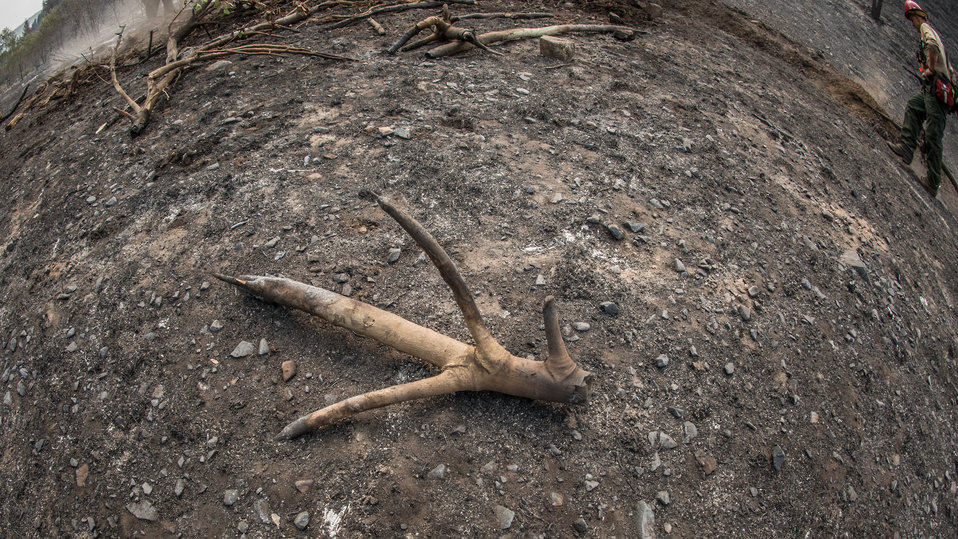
Beaver Creek Fire operations, west of Hailey, ID, on the lands of the U.S. Department of Agriculture (USDA) Forest Service (FS) and Sawtooth National Forest and Bureau of Land Management (BLM) on Wednesday, Aug 21, 2013.